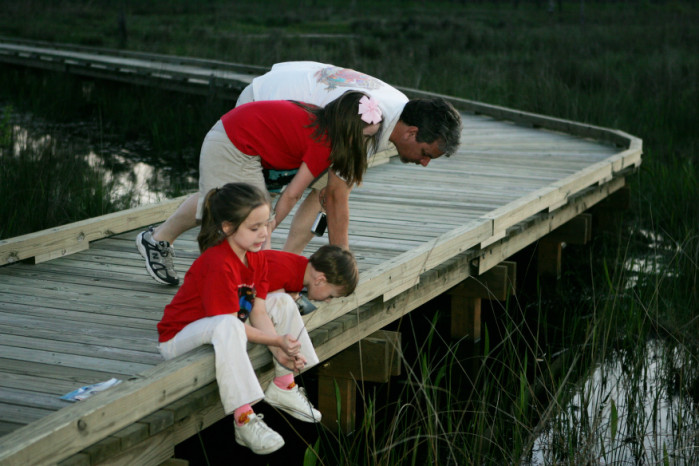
on the boardwalk

Big Branch National Wildlife Refuge